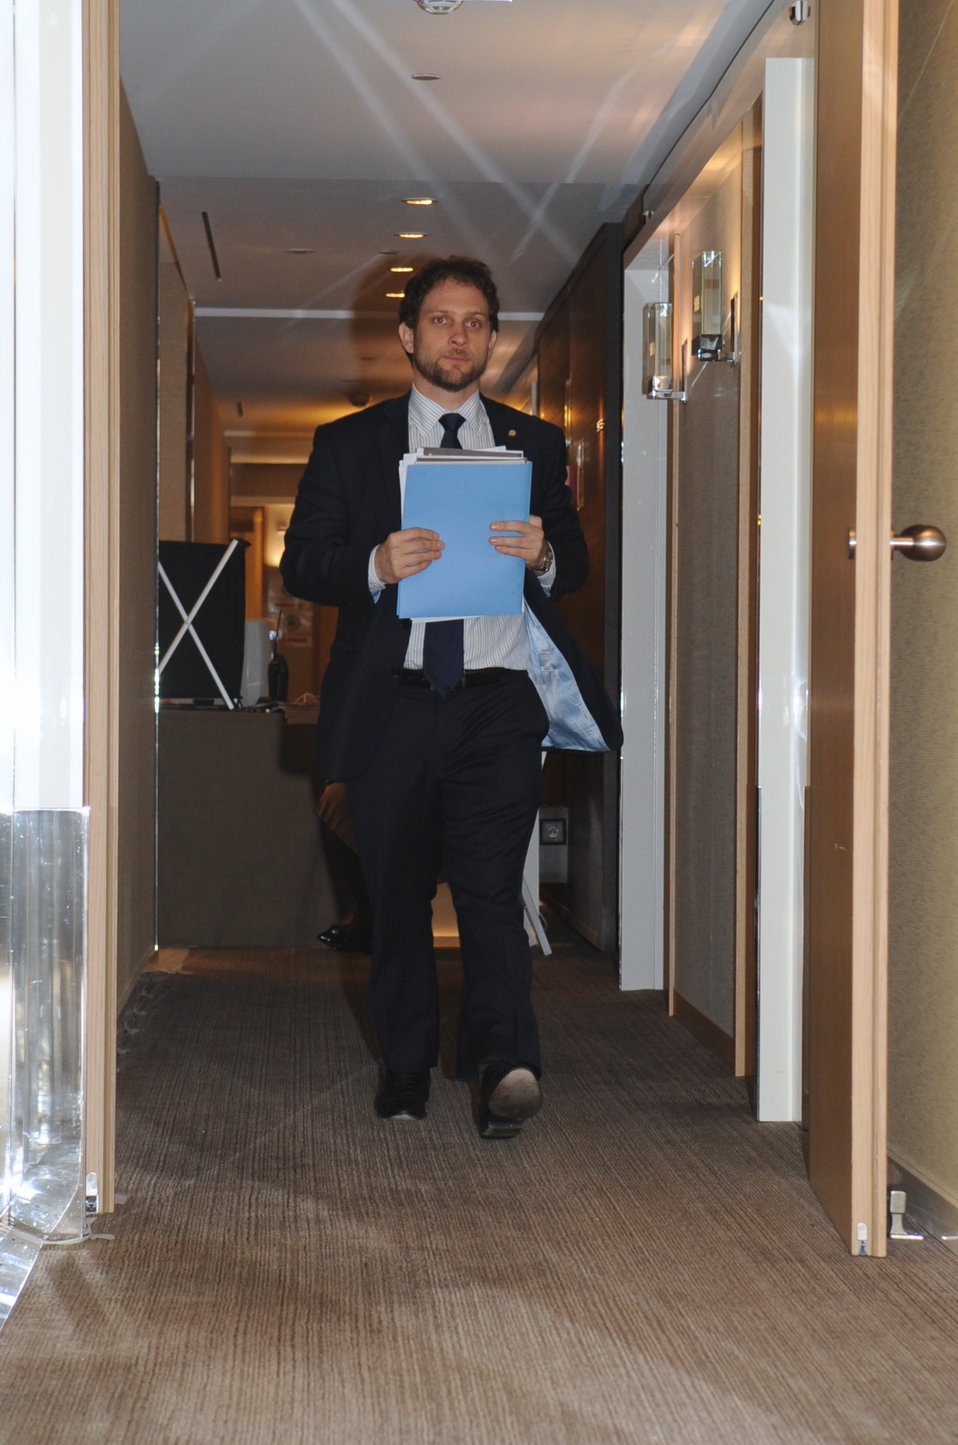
Deputy Chief of Staff Finer Returns With Draft Agreement

6:39 p.m., September 13, 2013 - State Department Deputy Chief of Staff Jonathan Finer returns to the hotel room of U.S. Secretary of State John Kerry with a revised draft of a U.S.-Russian agreement regarding the elimination of Syrian chemical weapons.